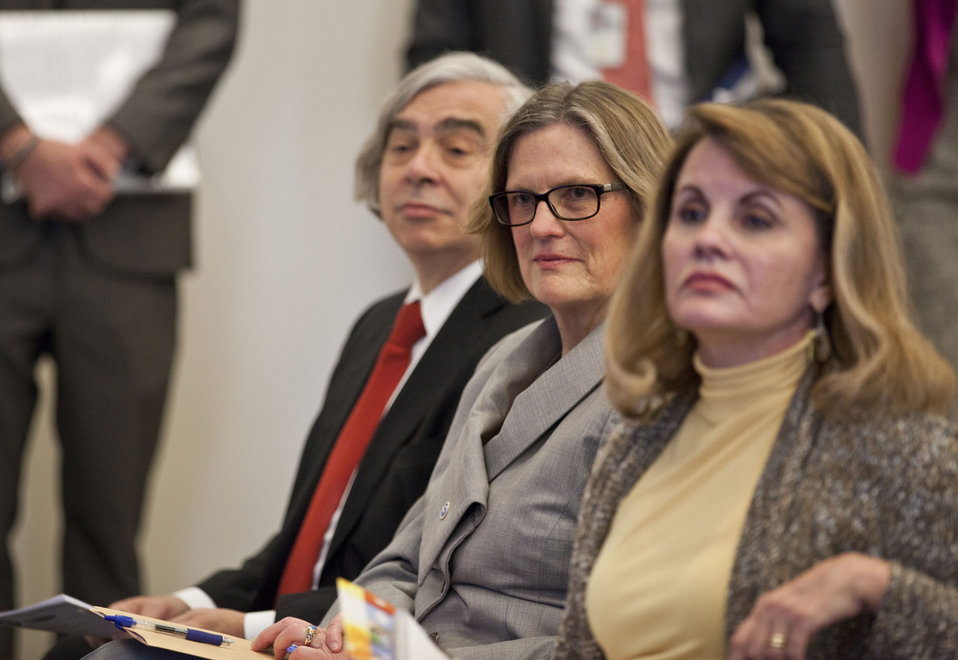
Photo of the Week: White House Leadership Summit on Women, Climate and Energy

This week, newly sworn-in Secretary of Energy Dr. Ernest Moniz delivered welcoming remarks at the White House Leadership Summit on Women, Climate and Energy. The event gathered 100 of the nation's top women in climate and energy to discuss priorities and solutions to challenges in these fields. They spent the day talking about the crucial roles women play in science, energy and climate to improve communities, workplaces, and schools all over the world.

In this photo, Secretary Moniz is joined by former astronaut and Acting Administrator of the National Oceanic and Atmospheric Administration Dr. Kathy Sullivan (center) and Department of Energy Senior Advisor Melanie Kenderdine (right).

j.mp/ZiyCjA